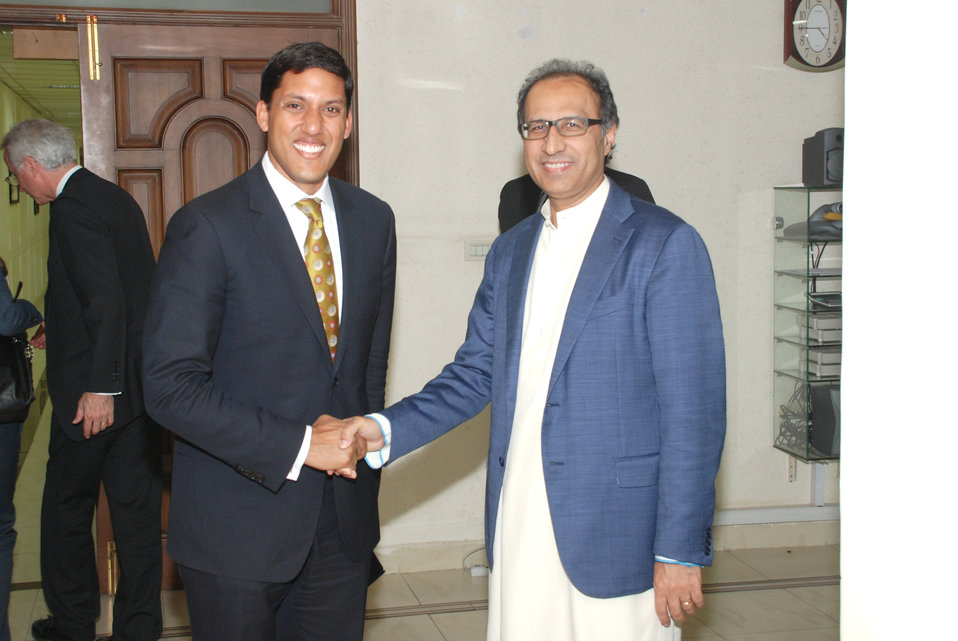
USAID and Pakistan Working Together to Promote Growth, Prosperity at Islamabad on April 13, 2012

Dr. Rajiv Shah shaking hand with Finance Minister of Pakistan Hafeez Sheikh